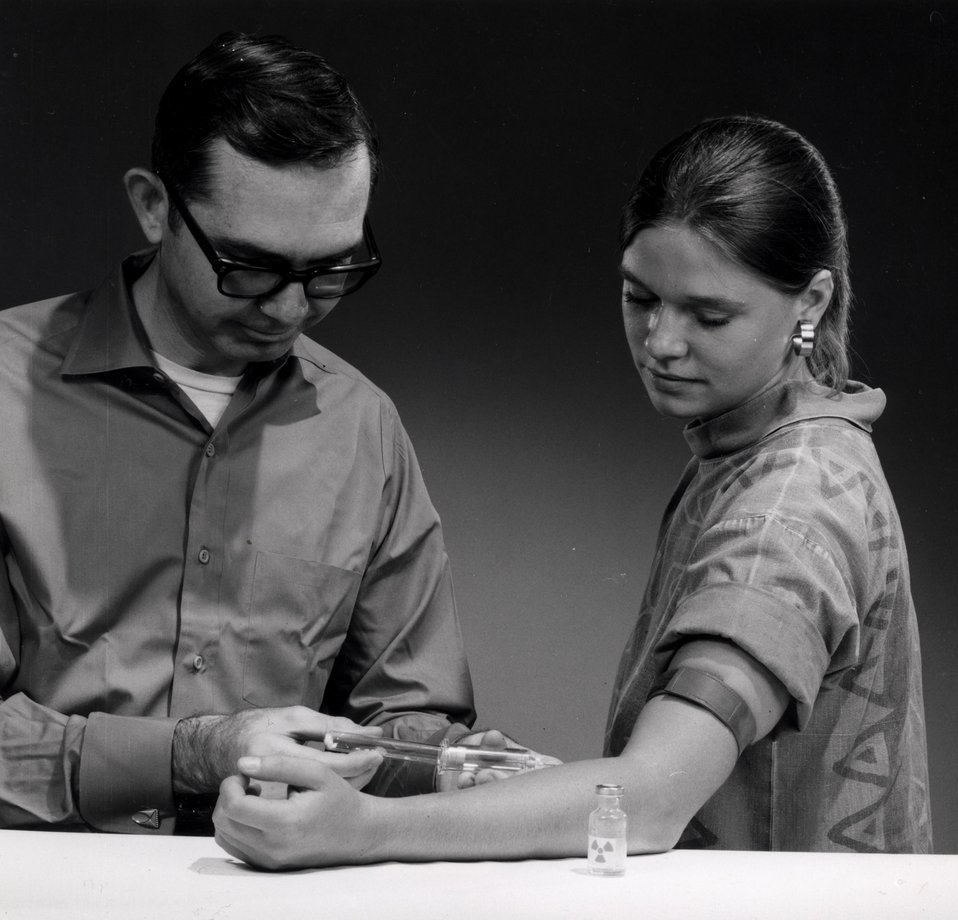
A diagnostic kit for labeling a patient's own red blood cells has been developed at Brookhaven. It is expected to contribute to diagnosis of vascular disorders, including heart, spleen, and blood measurements.